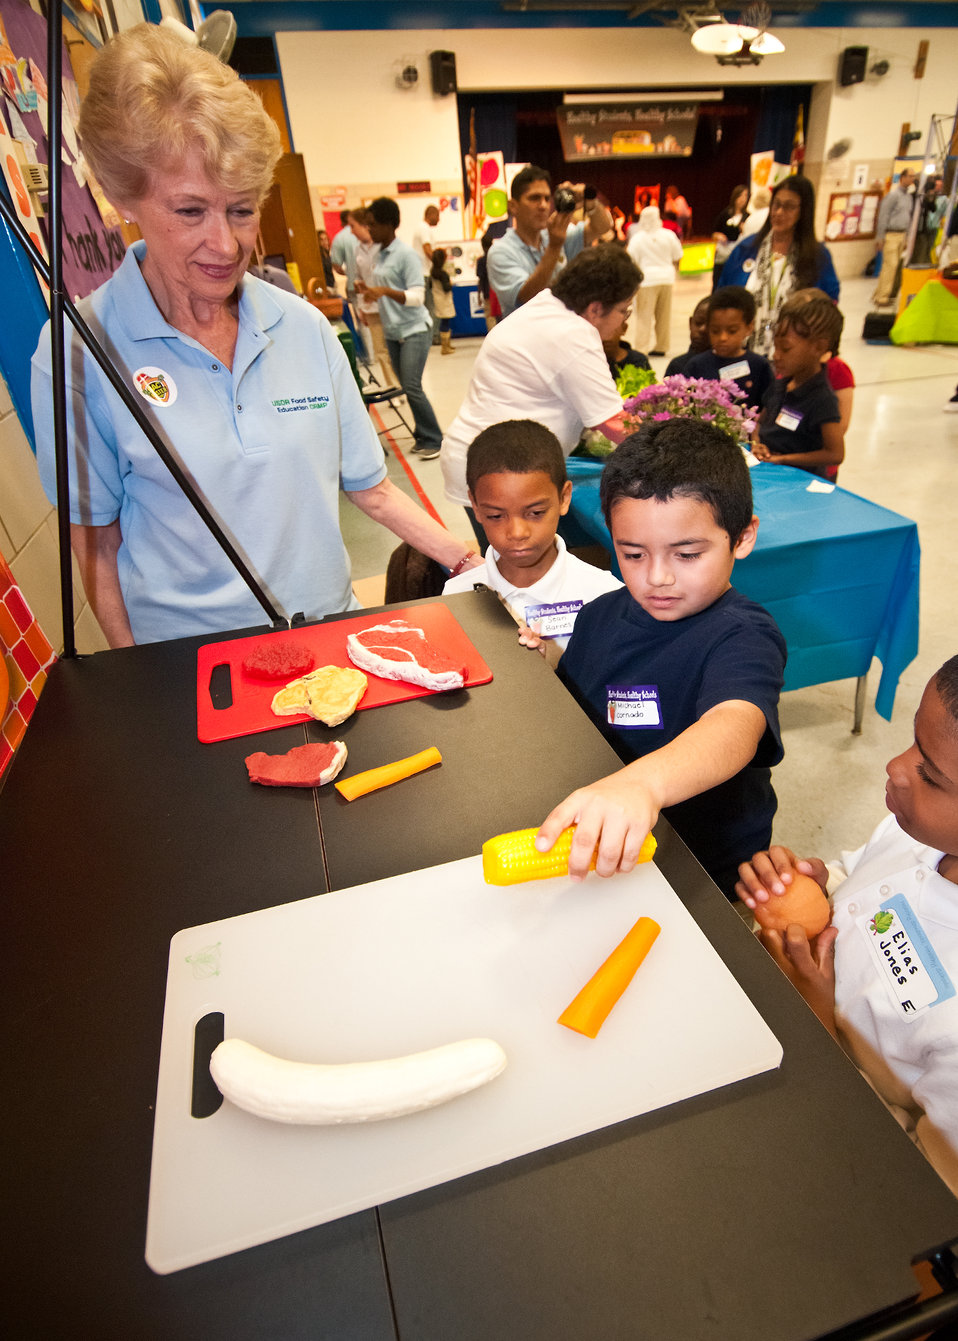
Sandy King, United States Department of Agriculture, Food Safety Inspection Service, Sean Barnes, Michael Cornado and Elias Jones students from Ms. Richardson’s first grade class at Maryland City Elementary School in Laurel, MD, learn to separate certain foods so they do not contaminate each other at the USDA, Food Safety Inspection Service, Food Safety Education Camp held at Maryland City Elementary, on Thursday, May 5, 2011.